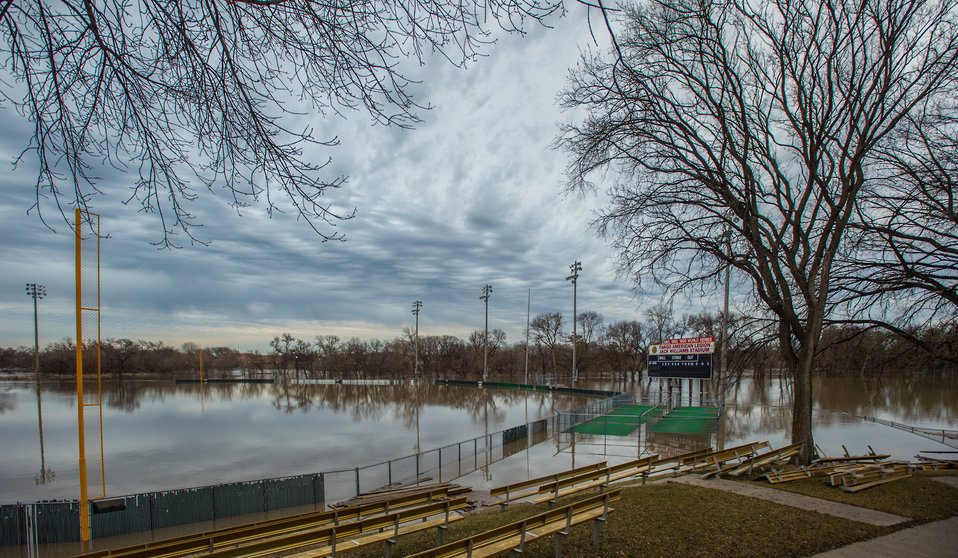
View of Jack Williams Stadium facility in Mickelson Field, with Red River flood waters, at 11th Ave. N. and Elm St. in Fargo, N.D. on Monday, April 29, 2013. To learn about the Red River Basin Initiative, see www.mn.nrcs.usda.gov/news/features13/RRBI.html.